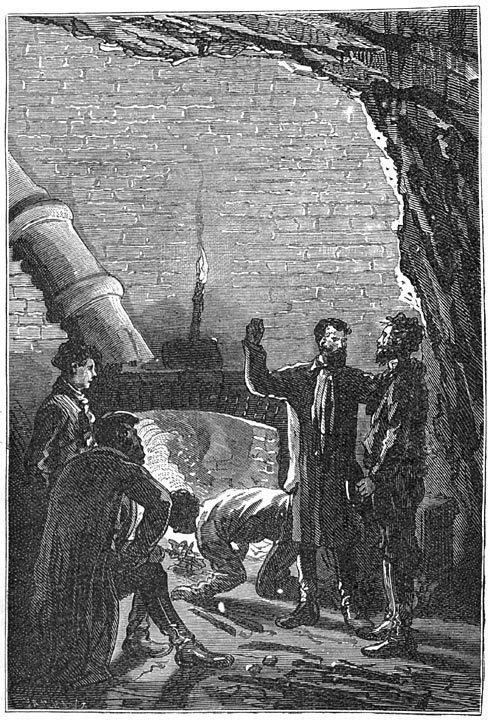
An illustration from Jules Verne's novel 'The Mysterious Island' (1873-74) drawn by Jules Férat. Polski: Ilustracja powieści Juliusza Verne'a 'Tajemnicza wyspa' (tytuł przekładany także jako: Wyspa tajemnicza, 1873-74) autorstwa Julesa Férata. Français : Jules Verne: 'L’Île mystérieuse' (1873-74), dessins par Jules Férat. Orginal description from the book: Français : « Savez-vous combien un grain de blé… »